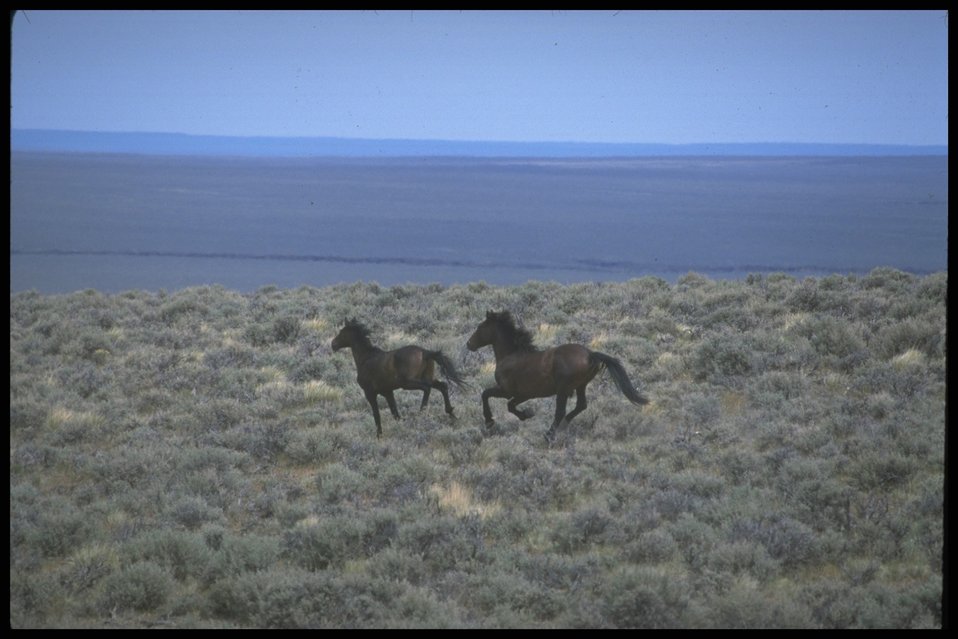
Far shot of wild horses, Lakeview District.